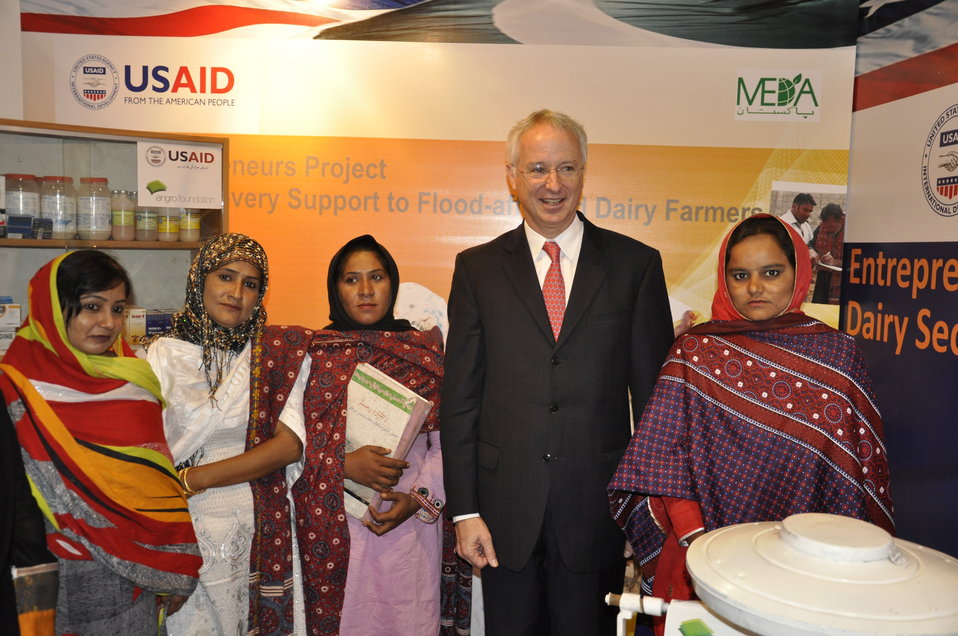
Ambassador Cameron Munter with the Dairy project beneficiaries at the Entrepreneurs project stall